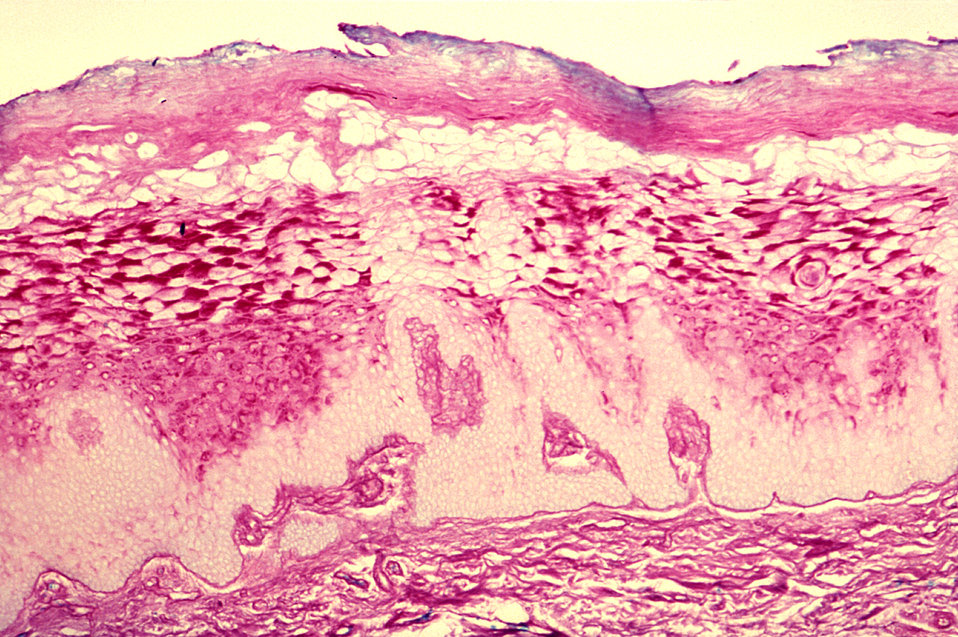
This H&E-stained micrograph reveals the cellular changes seen in an oral hairy leukoplakia (OHL) lesion.